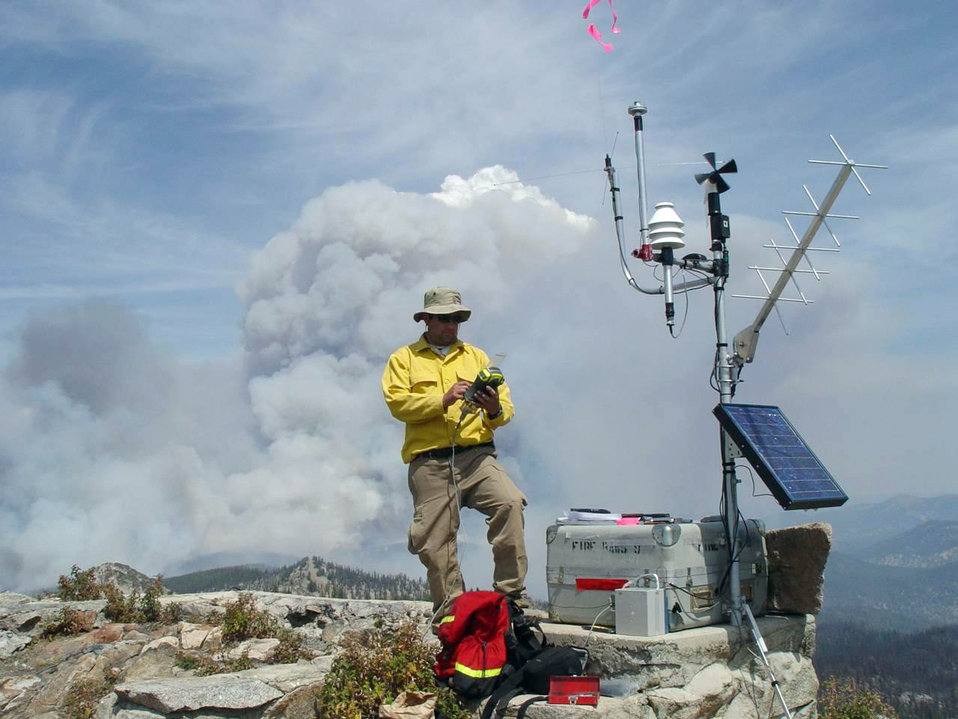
Firefighter sets up a Remote Automated Weather Station (RAWS) to monitor wind and weather conditions that will affect the Ridge Fire. The Ridge Fire in the Boise National Forest, ID near Lowman, ID began on Jul. 16, 2013 by lightning and has consumed approximately 5,143 acres. The Ridge Fire is approximately 20% contained.